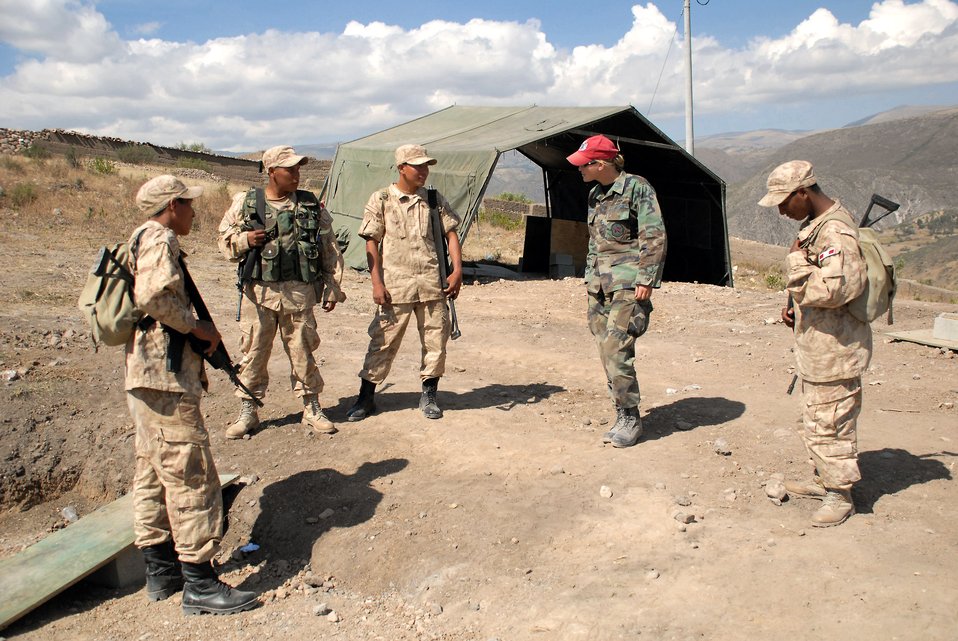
New Horizon Peru

Captain Stacy Nimmo talks with Peruvian military members during a visit to the construction site for a school being built in support of New Horizons Peru 2008, a humanitarian event that benefits thousands of Peruvians. Nearly 300 members from the U.S. Air Force, Army, Marines and Navy came together to provide Peruvians with new schools, clinics and water wells. Captain Nimmo is deployed from the 820th RED HORSE Squadron at Nellis Air Force Base, Nev.